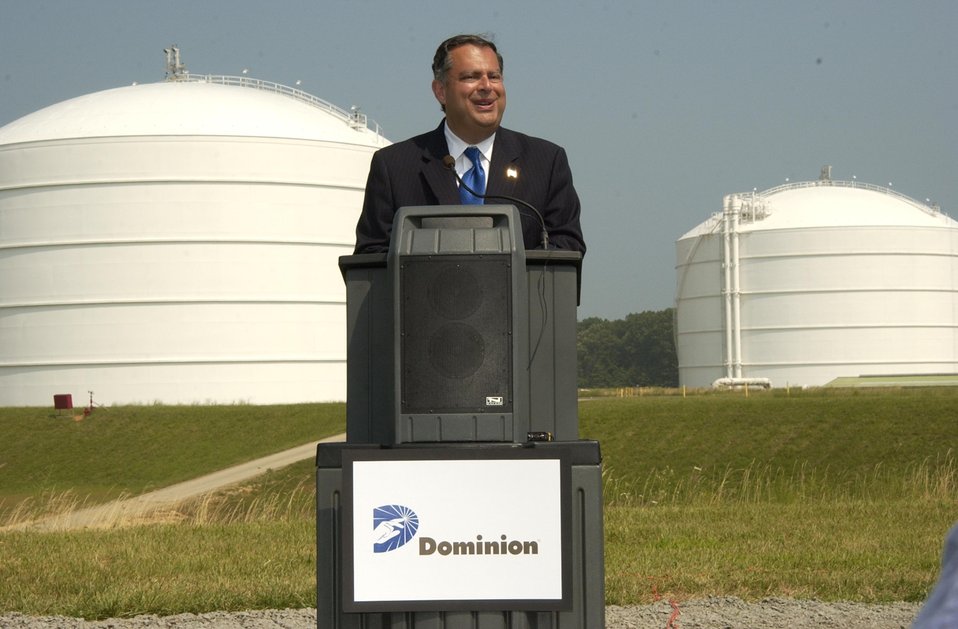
SECRETARY ABRAHAM SPEAKING AT THE COVE POINT LIQUIFIED NATURAL GAS (LNG), MARYLAND.

SECRETARY ABRAHAM TOURED THE COVE POINT LIQUIFIED NATURAL GAS (LNG) TERMINAL LOCATED ON THE CHESAPEAKE BAY IN CALVERT COUNTY, MARYLAND ON JULY 21, 2003. THERE IS A GROWING DEMAND FOR NATURAL GAS AND COVE POINT, OWNED BY DOMINION POWER, IS THE NATION'S FOURTH, AND LARGEST LNG TERMINAL.